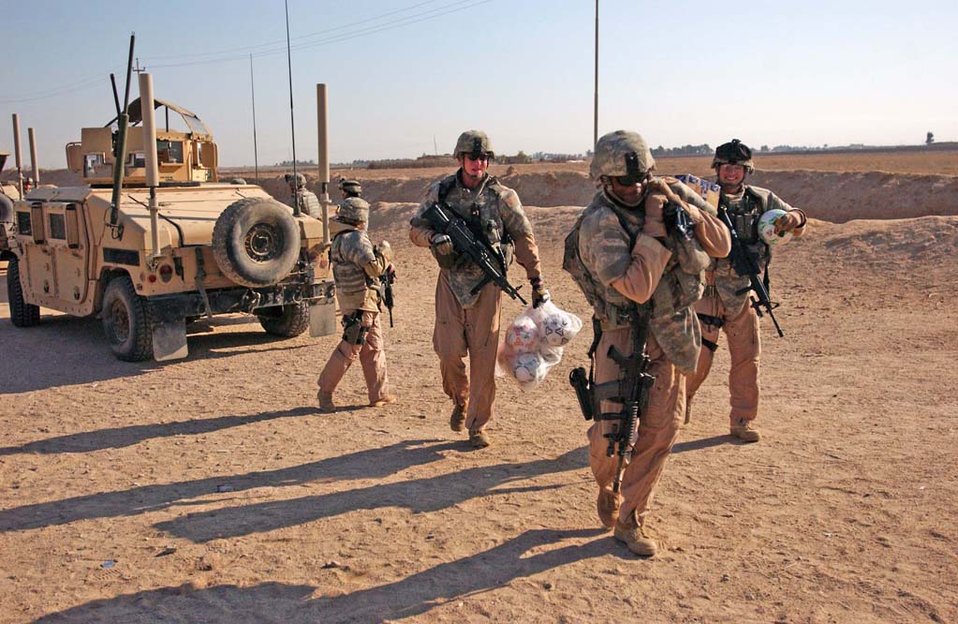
Sharing good will

Airmen from the 887th Expeditionary Security Forces Squadron at Camp Bucca, Iraq, deliver a load of soccer balls Feb. 7 to a school near Umm Quasr, Iraq. The donation is part of an area-wide effort to aid citizens living near Camp Bucca.